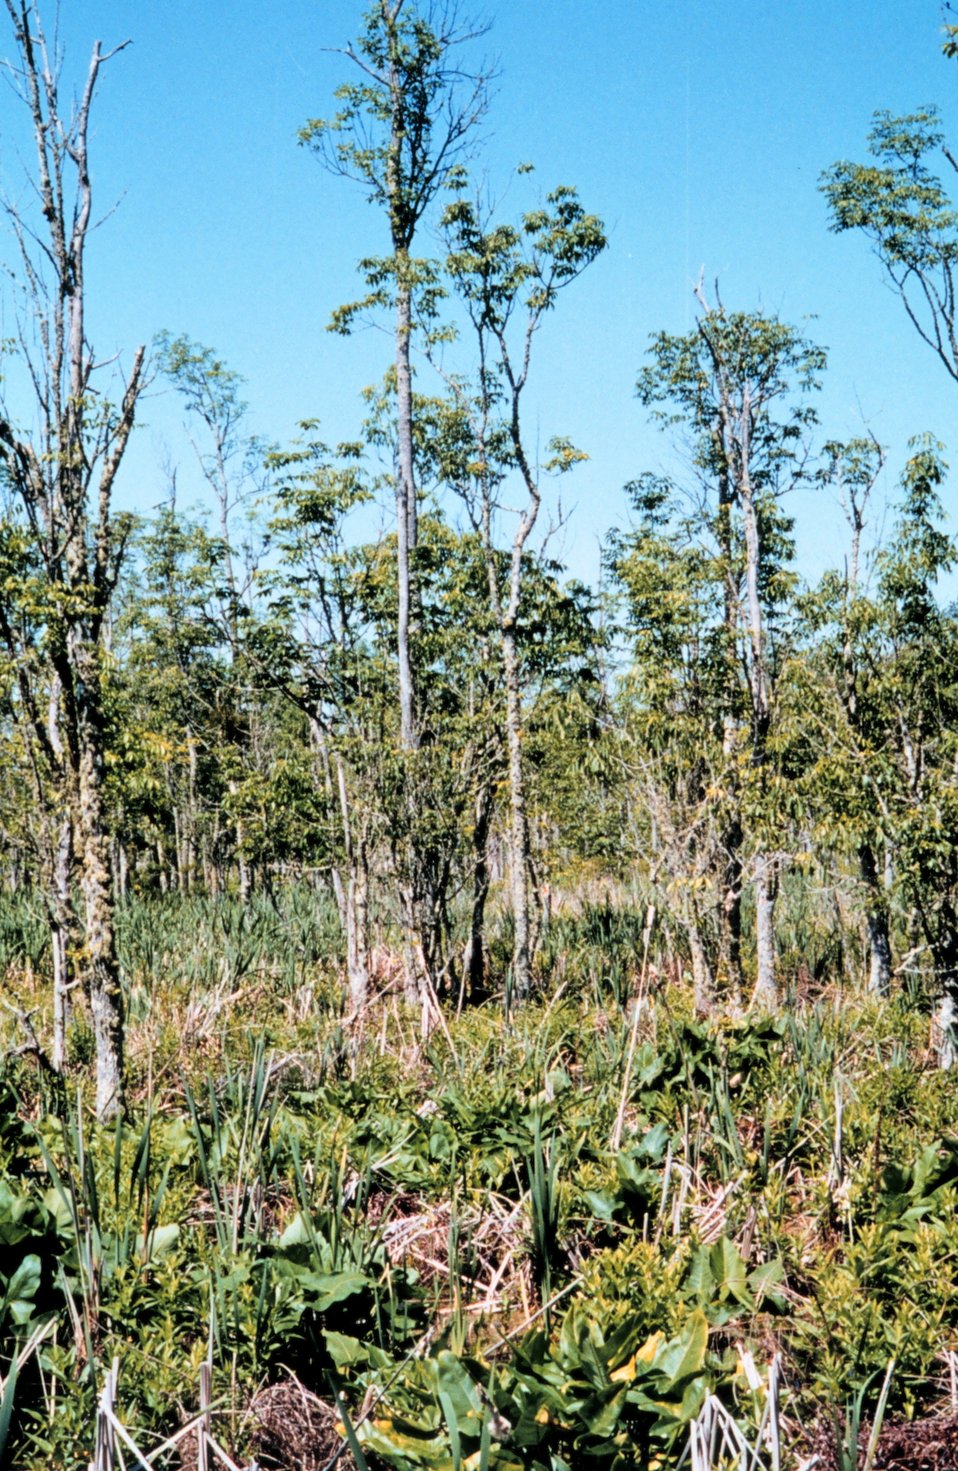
Wetlands in the vicinity of Jamestown, Virginia